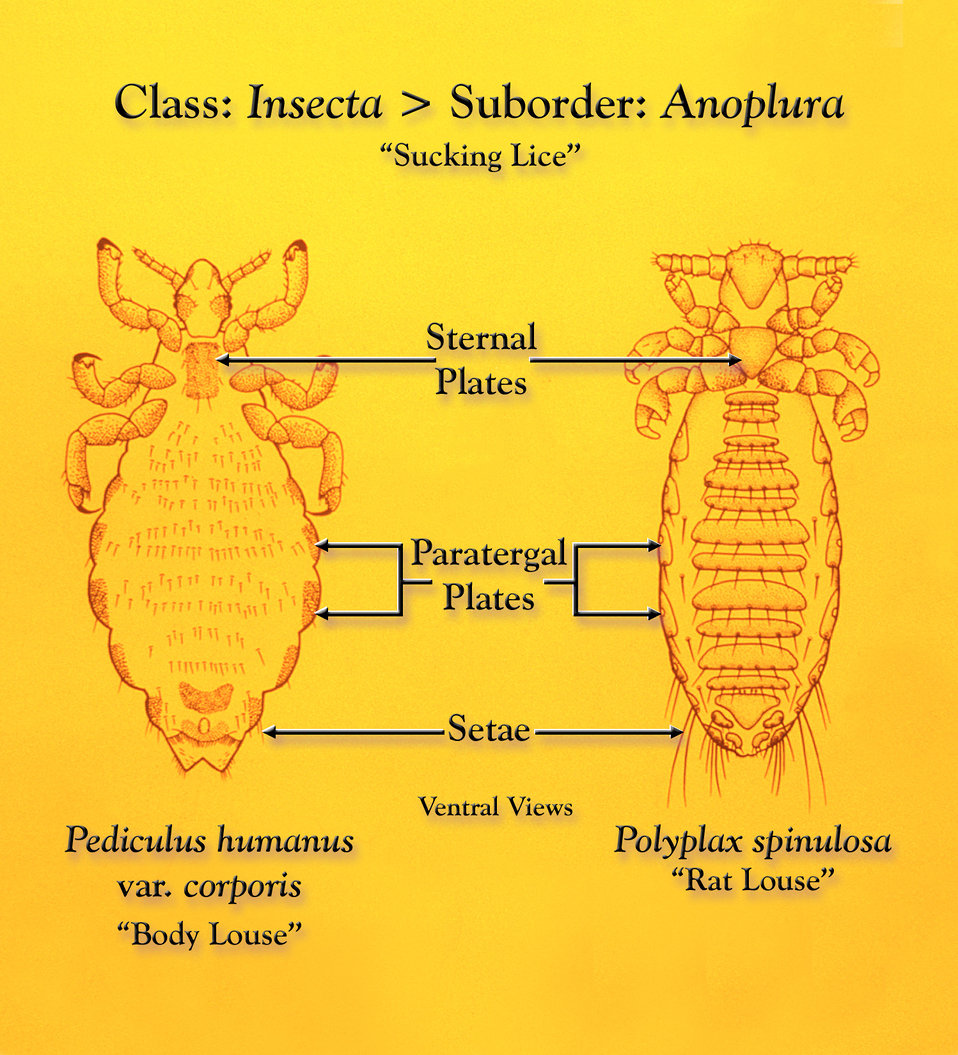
This illustration depicts a ventral view of two members of the Order Anoplura, i.e., 'sucking lice', the 'body louse', Pediculus humanus var. corporis (Lt), and the 'rat louse', Polyplax spinulosa (Rt).